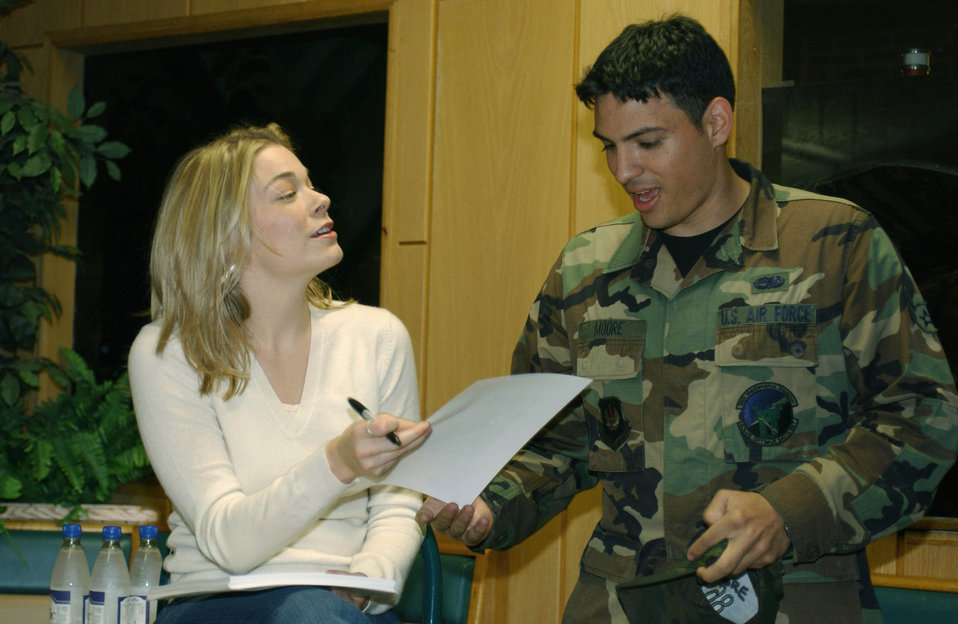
Rimes with Ramstein

RAMSTEIN AIR BASE, Germany -- LeAnn Rimes signs an autograph for Airman 1st Class Nicholas Moore. The country/pop singer performed a free concert for Airmen here Sept. 23. Airman Moore is assigned to the 86th Maintenance Squadron.